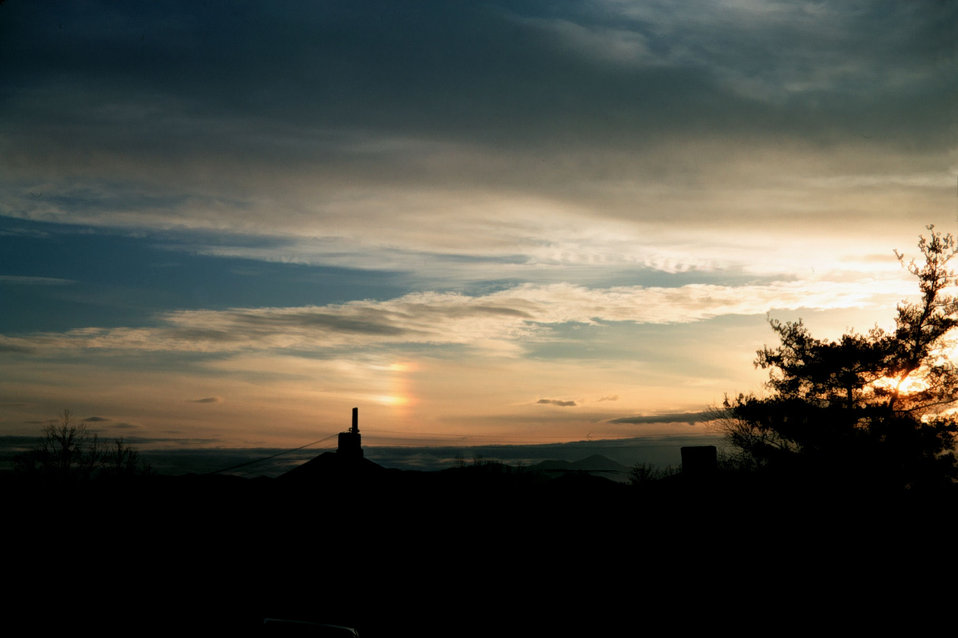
Parhelion or 'sun dog' to the left of the sun at sunset